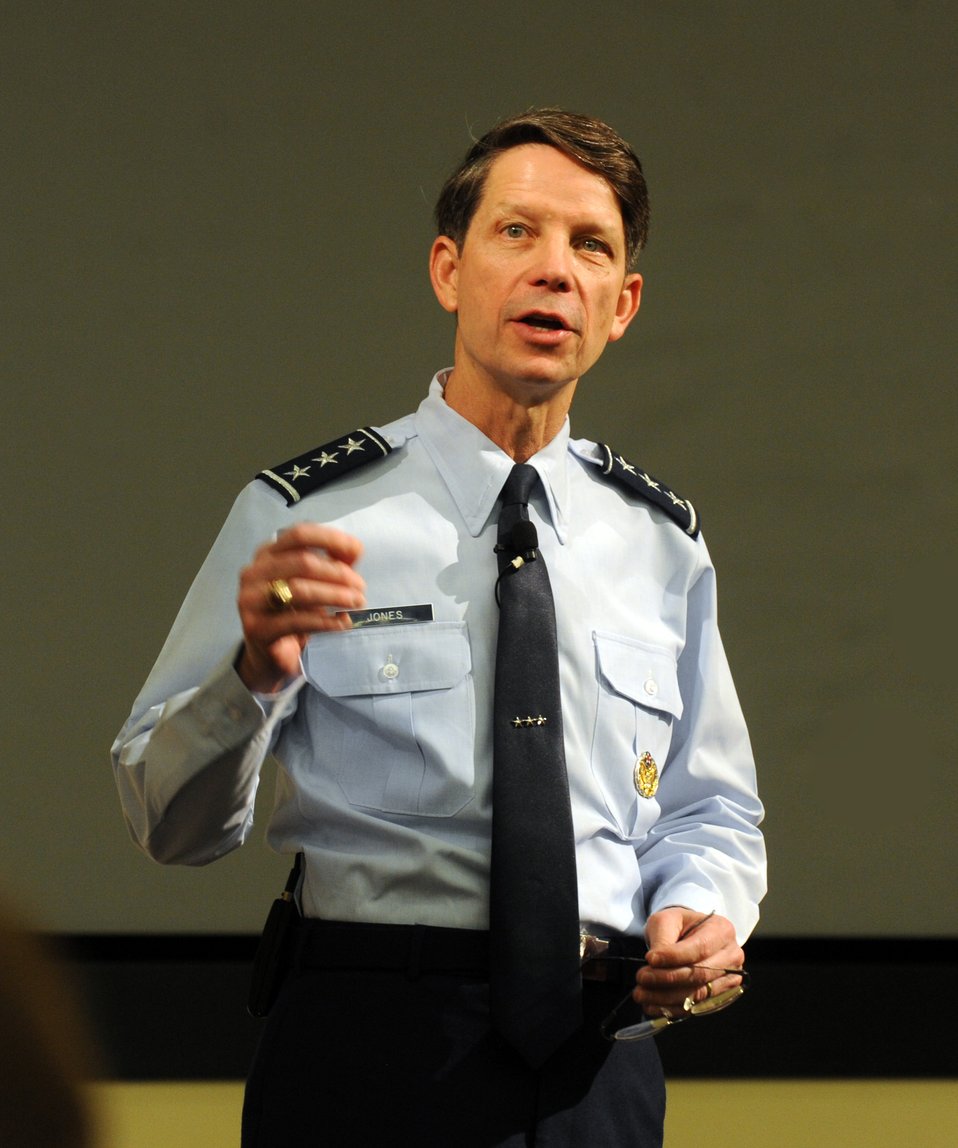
AF leaders gather to address sexual assault prevention, response

Lt. Gen. Darrell Jones speaks to attendees of the Sexual Assault Prevention and Response Leader Summit at the Smart Building on April 17, 2012 at Joint Base Andrews, Md. Jones is the deputy chief of staff for Manpower, Personnel and Services.